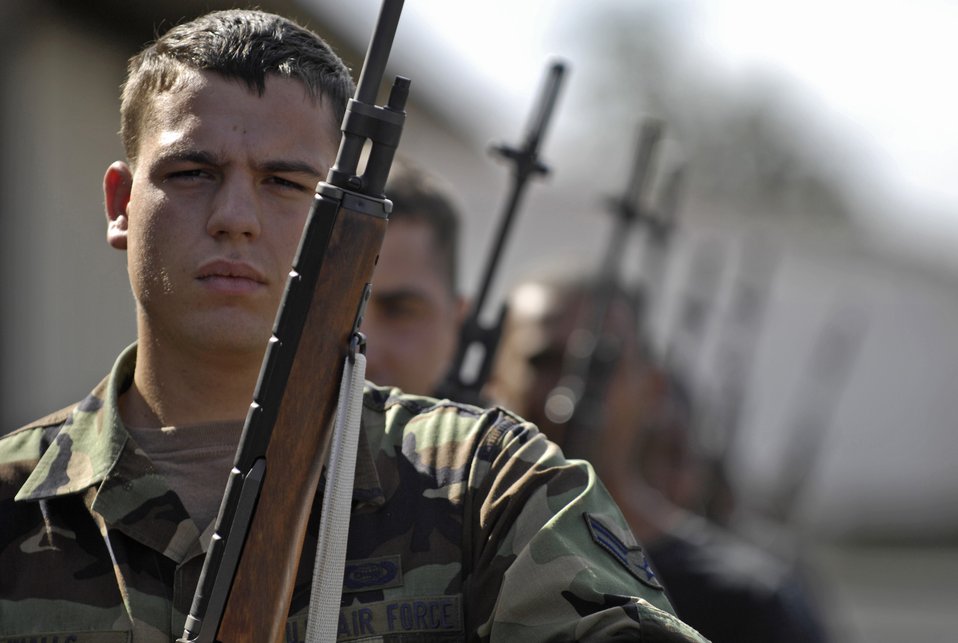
Honoring customs

Members of the 15th Airlift Wing Honor Guard practice gun salute firing positions at Hickam Air Force Base, Hawaii Oct. 25. The base honor guard emphasizes the importance of military customs and courtesies, dress and appearance, and drill and ceremony.